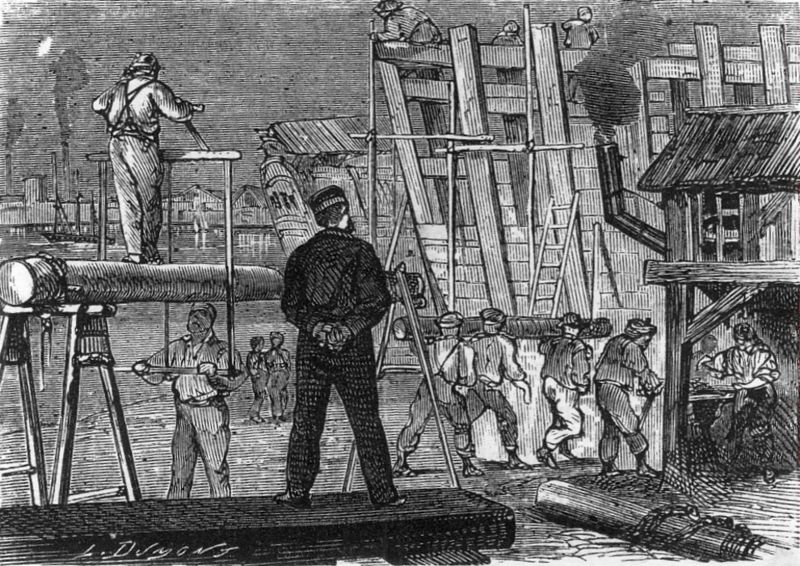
An illustration from Jules Verne's novel 'Journeys and Adventures of Captain Hatteras', part I: 'The English at the Noth Pole' drawn by Édouard Riou and/or Henri de Montaut. Polski: Ilustracja powieści Juliusza Verne'a 'Podróże i przygody kapitana Hatterasa', części I: 'Anglicy na Biegunie Północnym' autorstwa Édouarda Riou i/lub Henri de Montauta. Français : Jules Verne: 'Voyages et aventures du capitaine Hatteras - Les Anglais au Pôle Nord', Édouard Riou et Henri de Montaut.